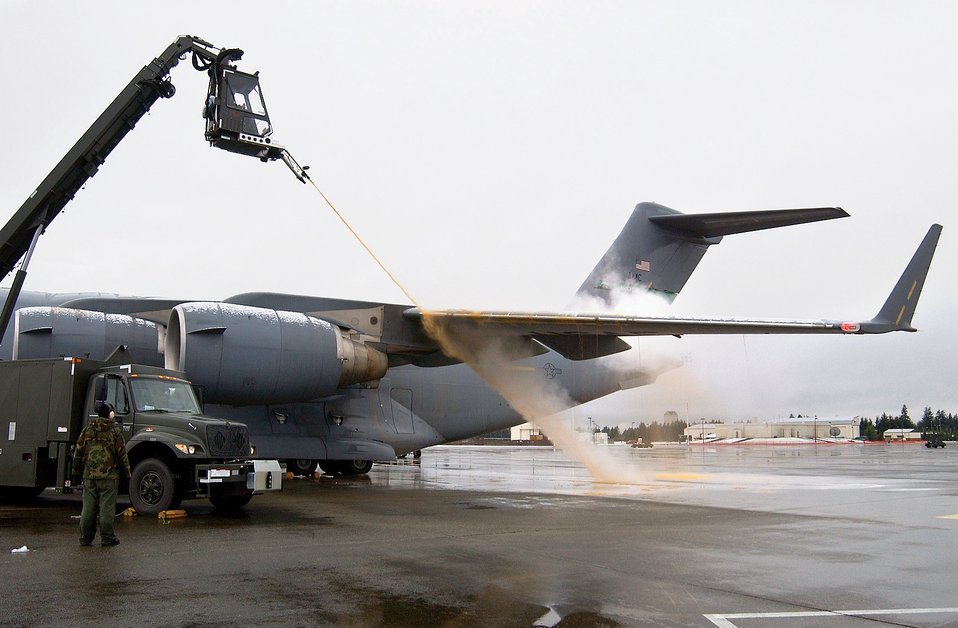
McChord Airmen de-ice a C-17

MCCHORD AIR FORCE BASE, Wash. (AFPN) -- A C-17 Globemaster III is de-iced after two bands of heavy snow blanketed the base.